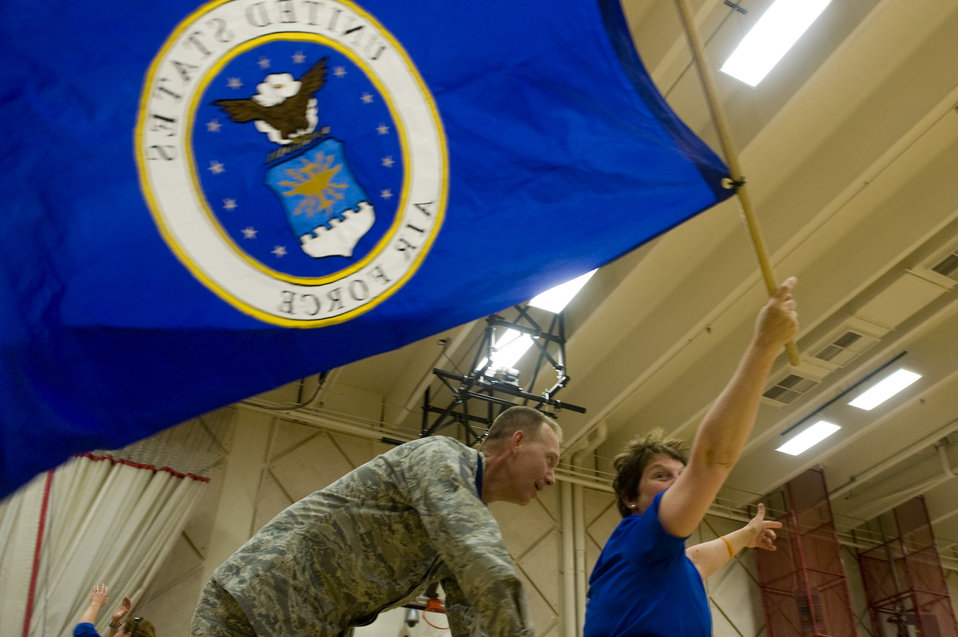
Army marches through Air Force

Jeanne Goldy-Sanitate cheers on the Air Force sitting volleyball team May 19, 2011, during the the second annual Warrior Games in Colorado Springs, Colo. The Army team beat the Air Force team 29-12.